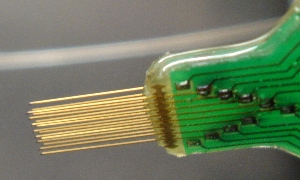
Photo by Steve M. Potter chronic multi-wire probe